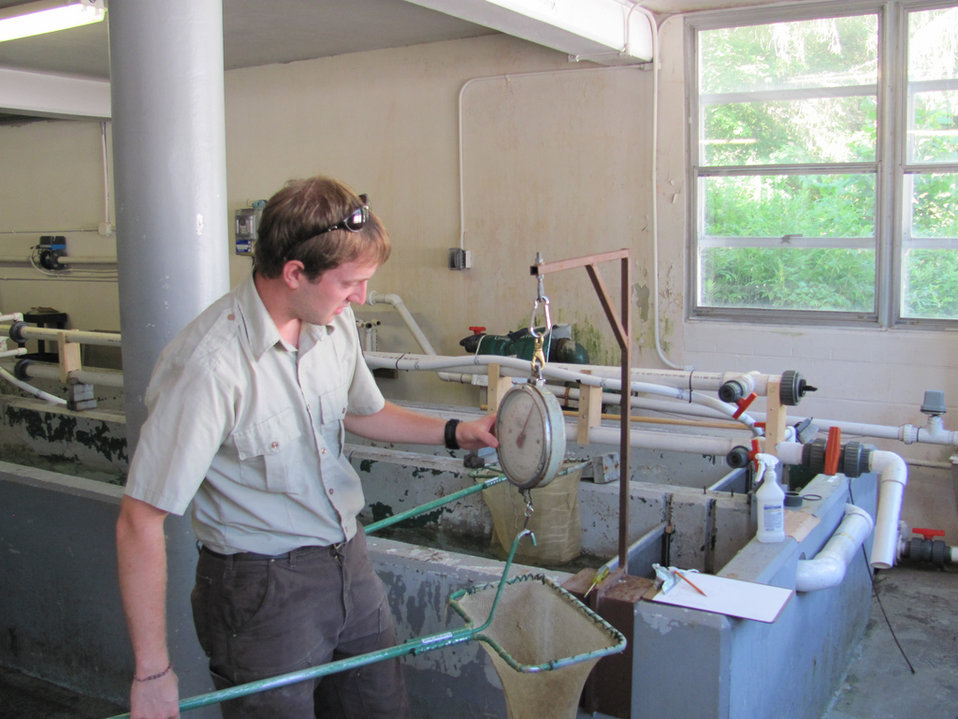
Field work

U.S. Fish and Wildlife Service